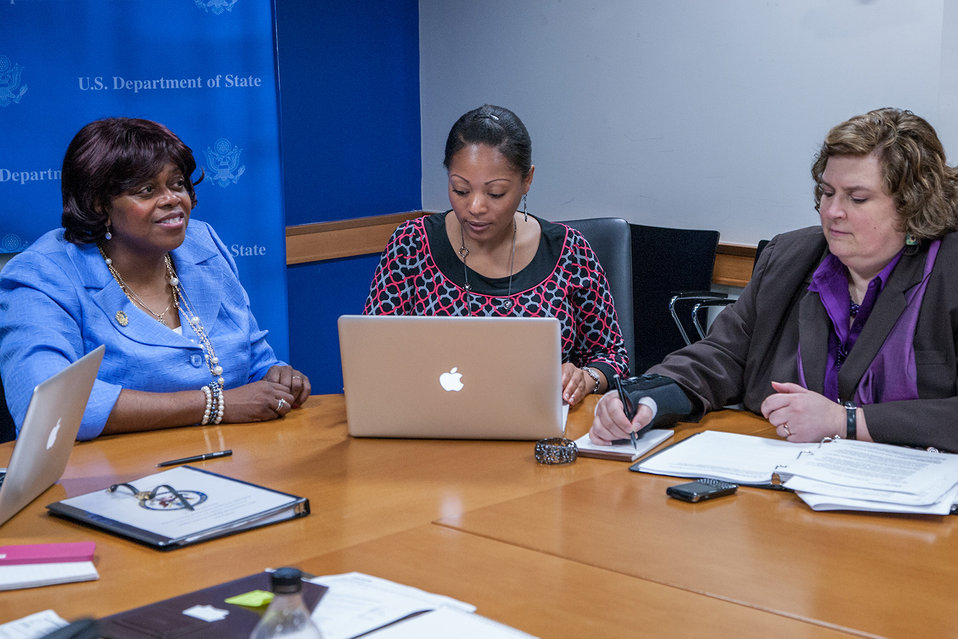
Ambassador Johnson Cook Participates in a Facebook Chat

Ambassador-at-Large for International Religious Freedom Suzan Johnson Cook participates in a Facebook chat at the U.S. Department of State in Washington, D.C., on may 20, 2013.